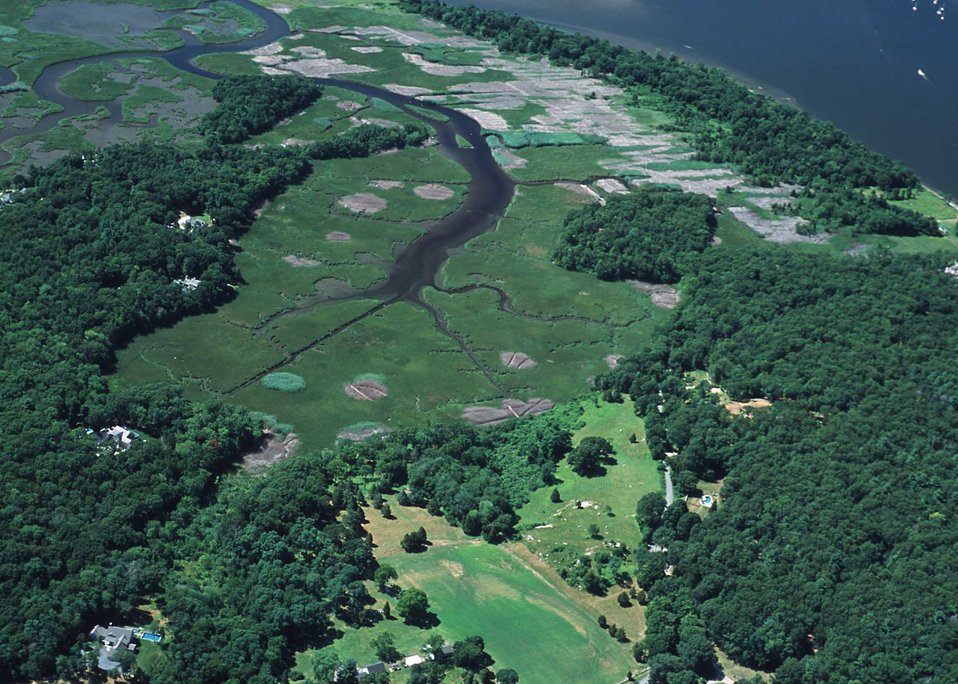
Connecticut River tideland habitat undergoing invasive plant control (light colored areas) and native plant community restoration.